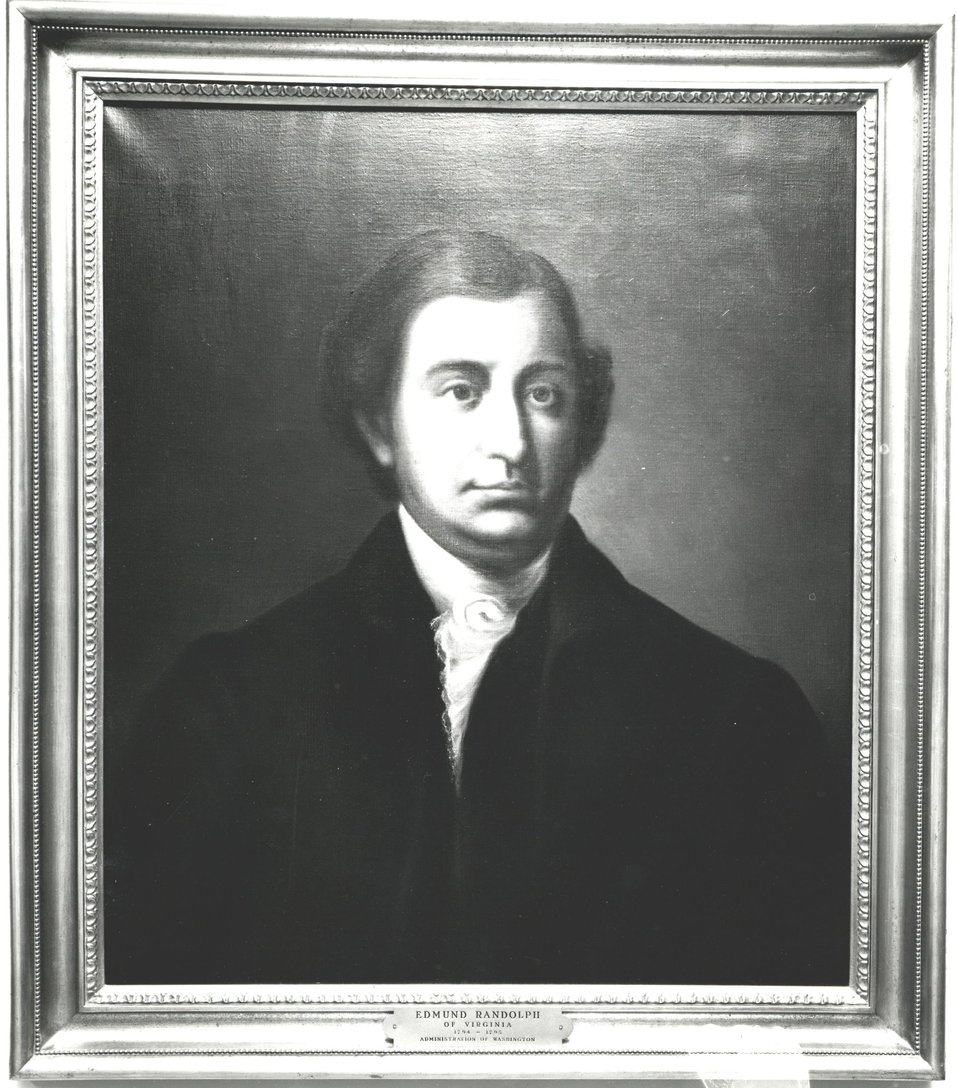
Edmund Randolph, U.S. Secretary of State, January 2, 1794 to August 20, 1795